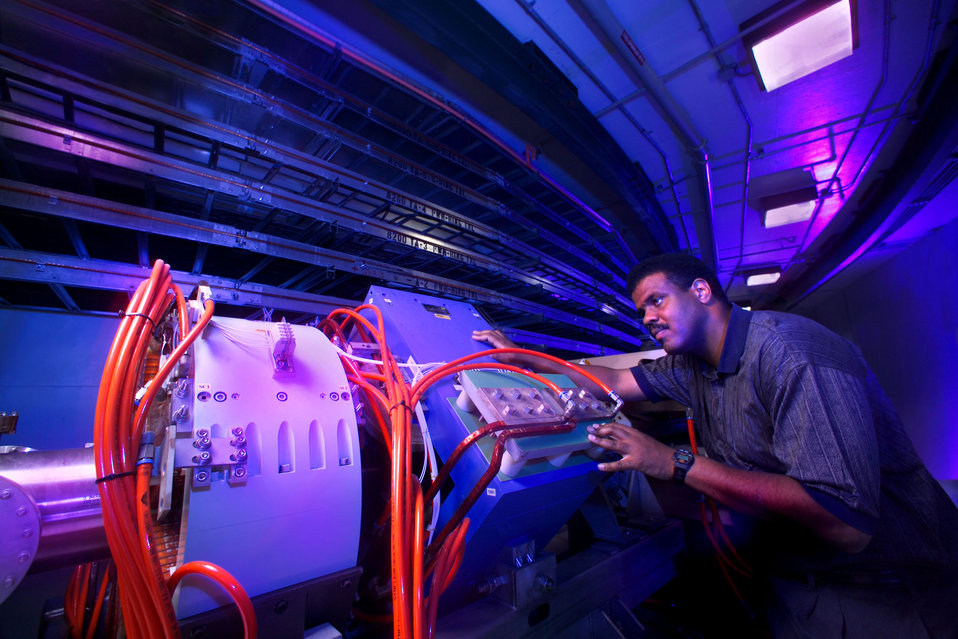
ORNL Spallation Neutron Source

Spallation Neutron Source (SNS) accumulator ring at Oak Ridge National Lab. The $1.4 billion facility was completed in 2006. It is the world's largest facility to study materials.